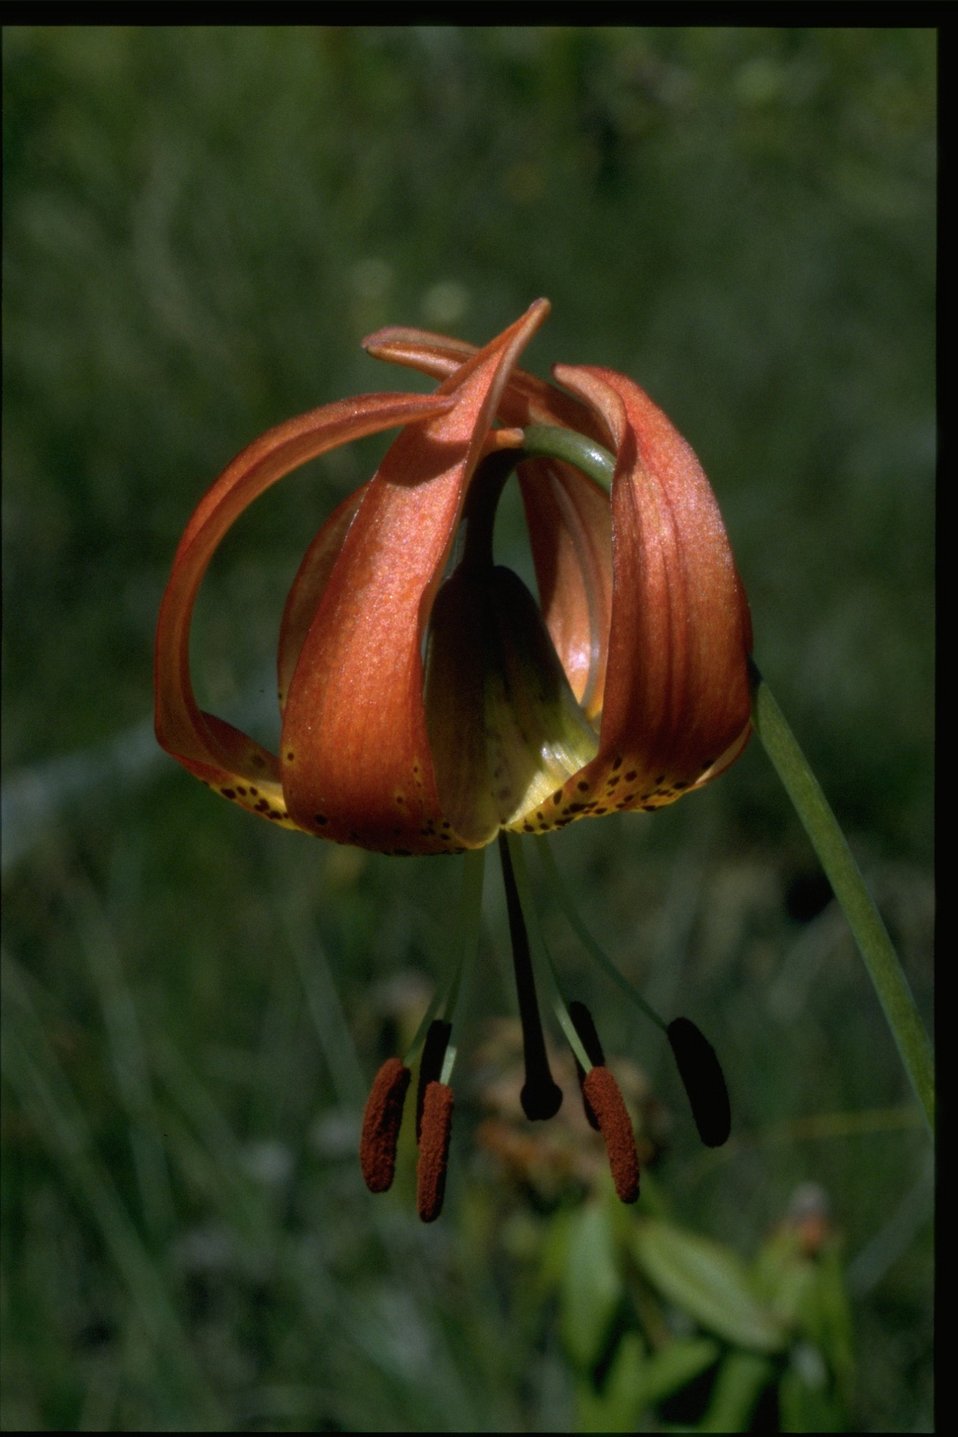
Closeup shot of Lilium pardalinum var vollmeri.